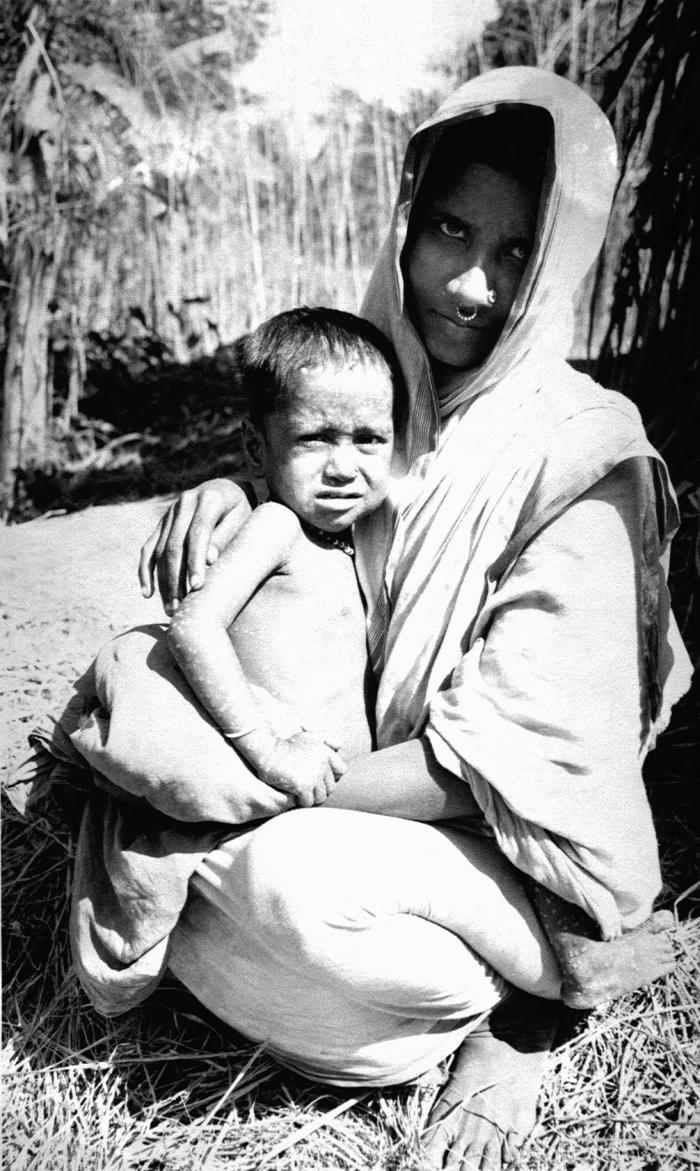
This 1975 photograph depicted a mother holding her 2 year old female child by the name of Rahima Banu, who was actually the last known case of naturally-occurring smallpox, or variola major, in the world. Her case was reported to public health smallpox eradication team authorities by an 8 year old girl named Bilkisunnessa, who was paid her 250 Taka reward for her diligence. The case occurred in the Bangladesh district of Barisal, in a village named Kuralia, on Bhola Island. The case occurred on October 16, 1975. Note the distribution of the pustules, for their greatest density was found on her face and extremities, which is characteristic of the smallpox maculopapular rash.